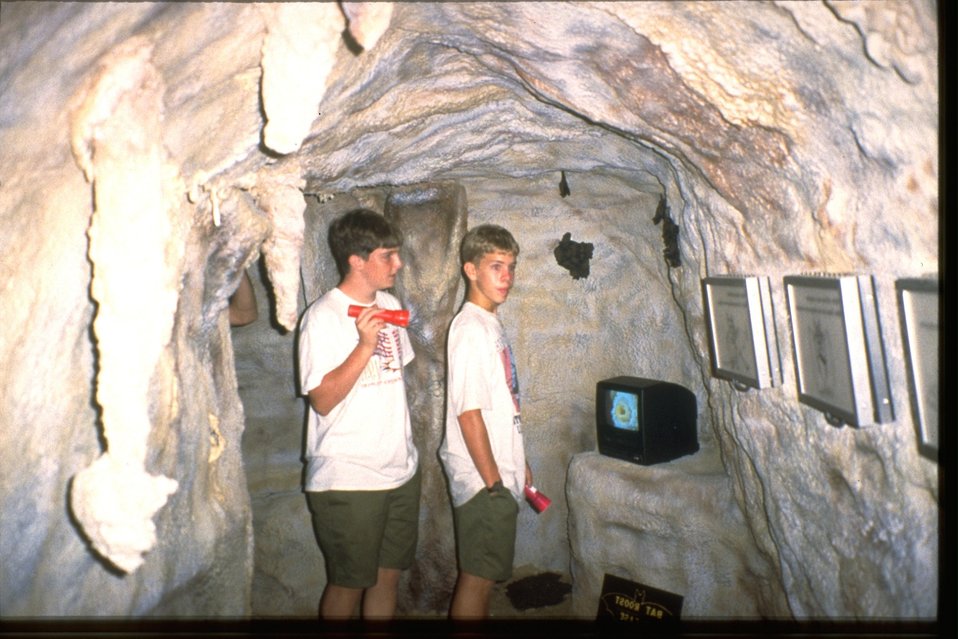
Boy Scouts National Jamboree: BLM caves exhibit.